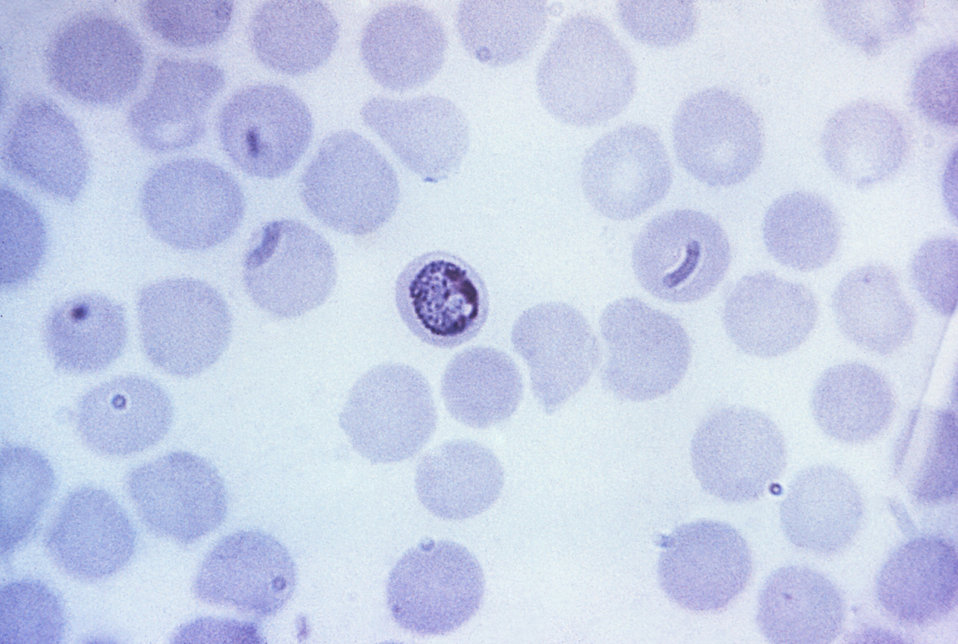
This thin film Giemsa stained micrograph depicts a Plasmodium malariae trophozoite.